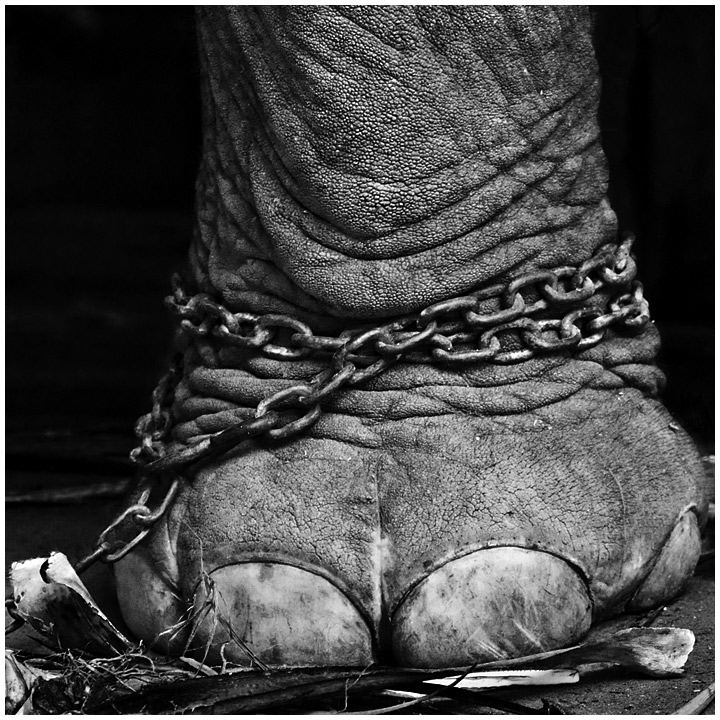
Uploaded by requesst of Benjamin Huseman

Taken in Phuket, Thailand

This photo was taken at an Elephant Trek on the resort island of Phuket,
Thailand. The elephant trek was supposed to be a rehabilitation center for elephants that had been abused in the labor camps of Thailand. Despite the rehabilitation effort I felt there was great sorrow in this magnificant
creature being chained up as opposed to being able to walk free amongs the
prairies as it should.